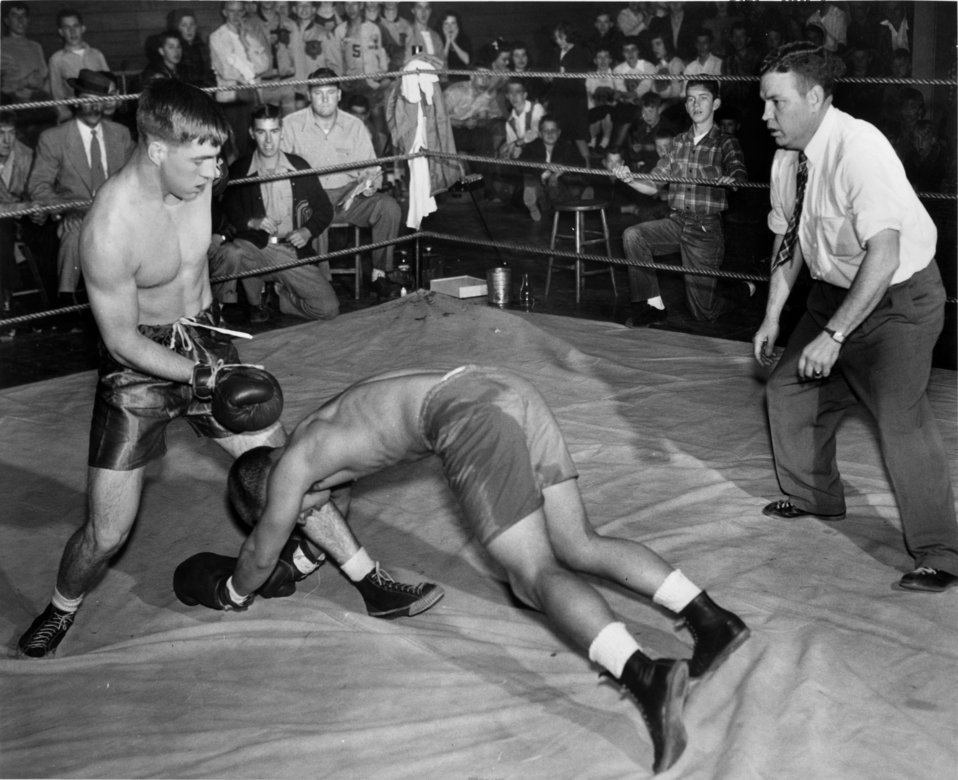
High School Boxing Match Oak Ridge

4305 DOE photo by Ed Westcott
High School Boxing Match Oak Ridge Tennessee 2-6-1948